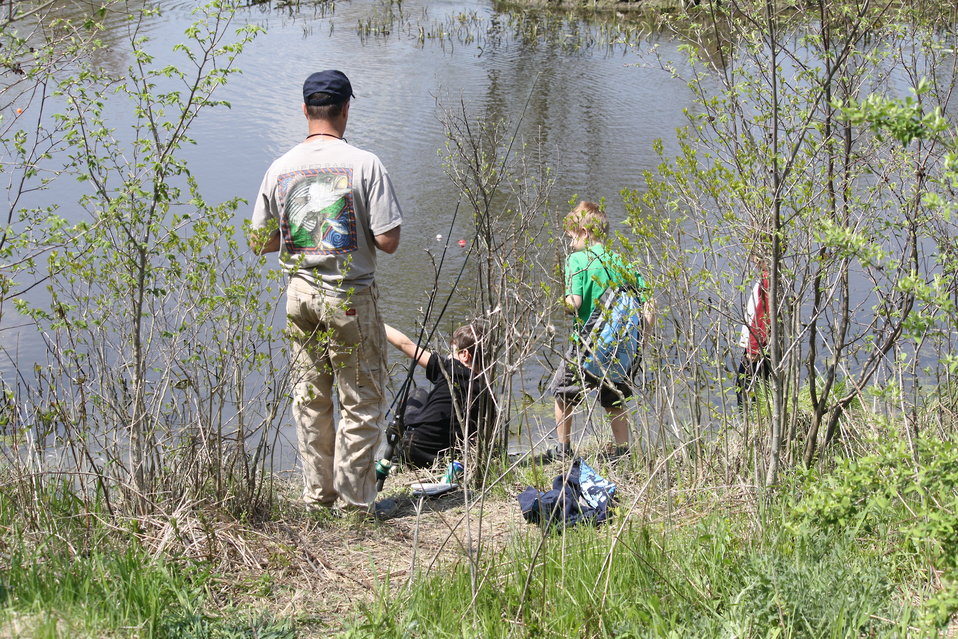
Father and son fishing

At the USFWS fishing derby in Hadley, MA.